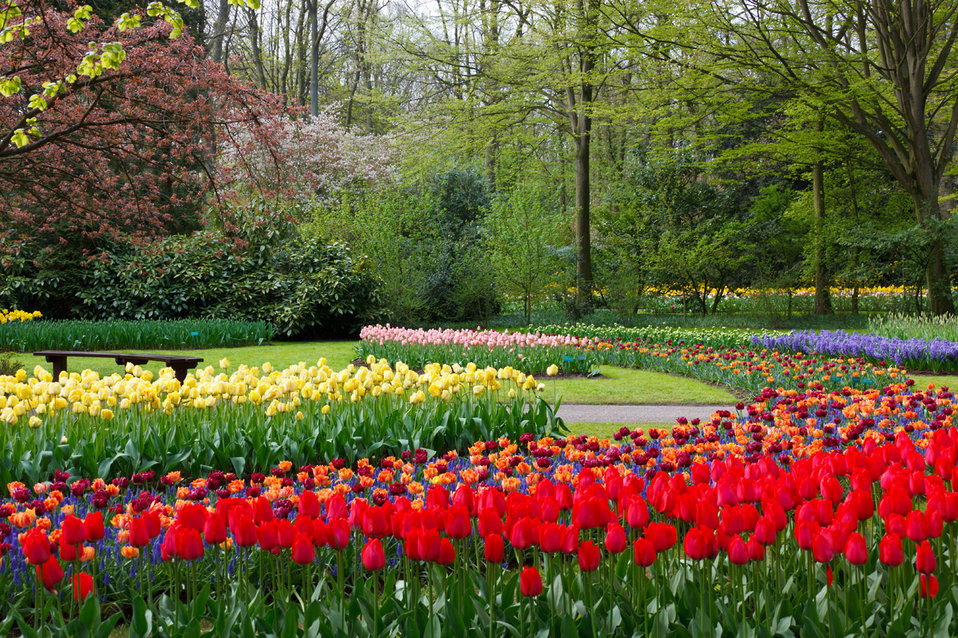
At keukenhof gardens

Flowers at keukenhof gardens.